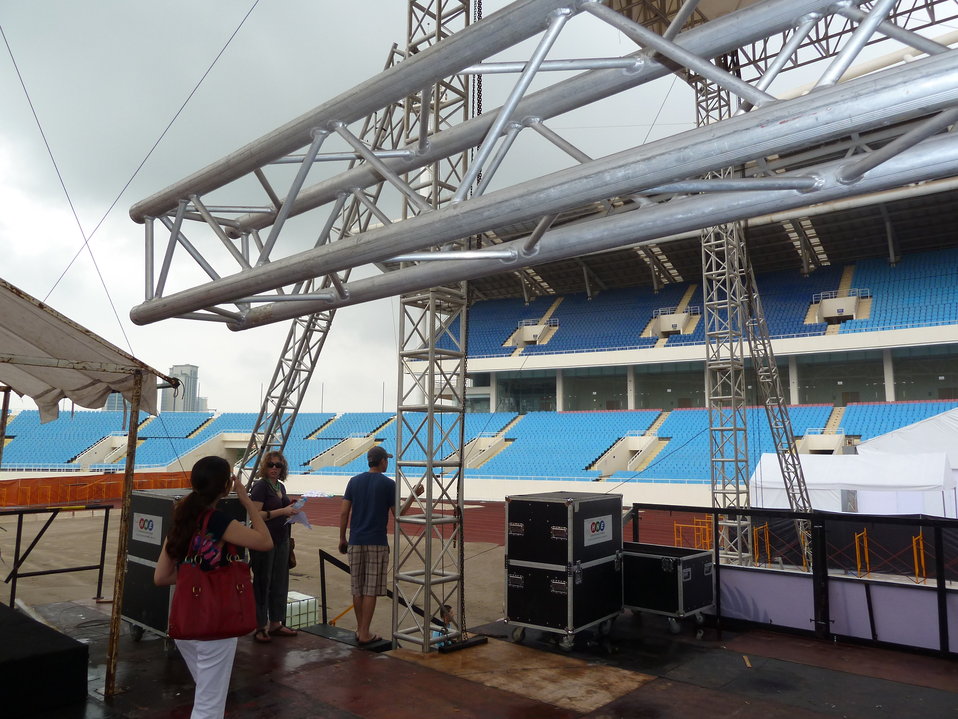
Preparations under way for big MTV EXIT concert in Hanoi on May 26, 2012

Co-sponsored by USAID.